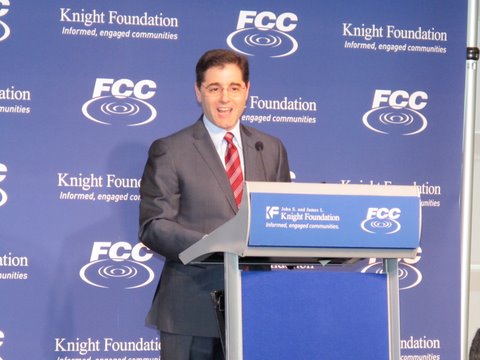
FCC Chairman Julius Genachowski addresses America's Digital Inclusion Summit at The Newseum, March 9, 2010.